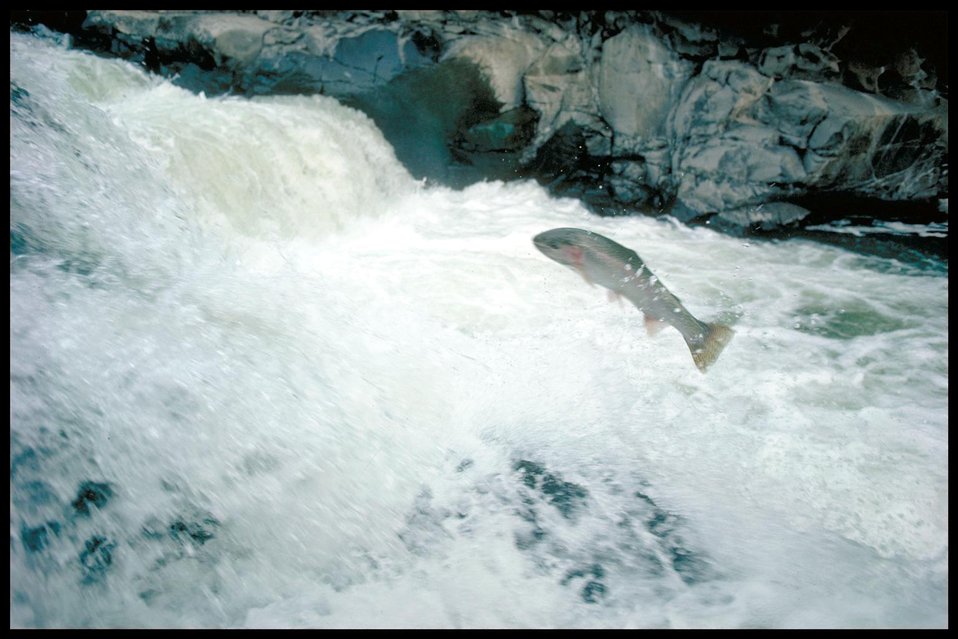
STEEL HEAD SALMON JUMPING OVER RAPIDS.

SALMON WORK THEIR WAY UP TO THE UPPER REACHES OF FRESH WATER STREAMS TO SPAWN. CONGRESS HAS AUTHORIZED THE BONNEVILLE POWER ADMINISTRATION TO FINANCE FISH PROTECTION MEASURES.